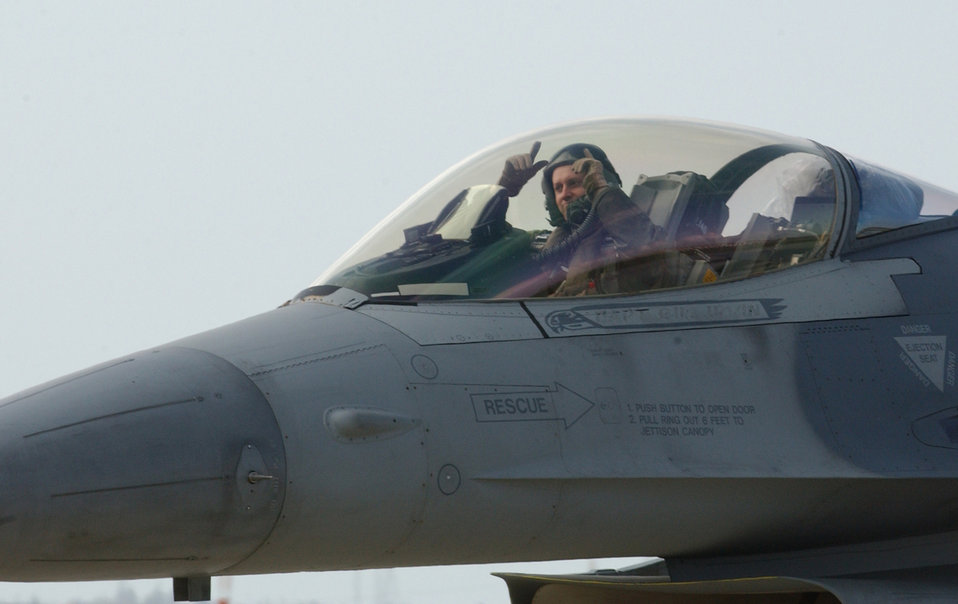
Heading home

INCIRLIK AIR BASE, Turkey -- An F-16CJ Fighting Falcon pilot with the 55th Expeditionary Fighter Squadron prepares for his final takeoff from here. He and other airmen are returning home to Shaw Air Force Base, S.C. after supporting Operation Northern Watch for several years. Aircraft flew their last ONW mission March 17.